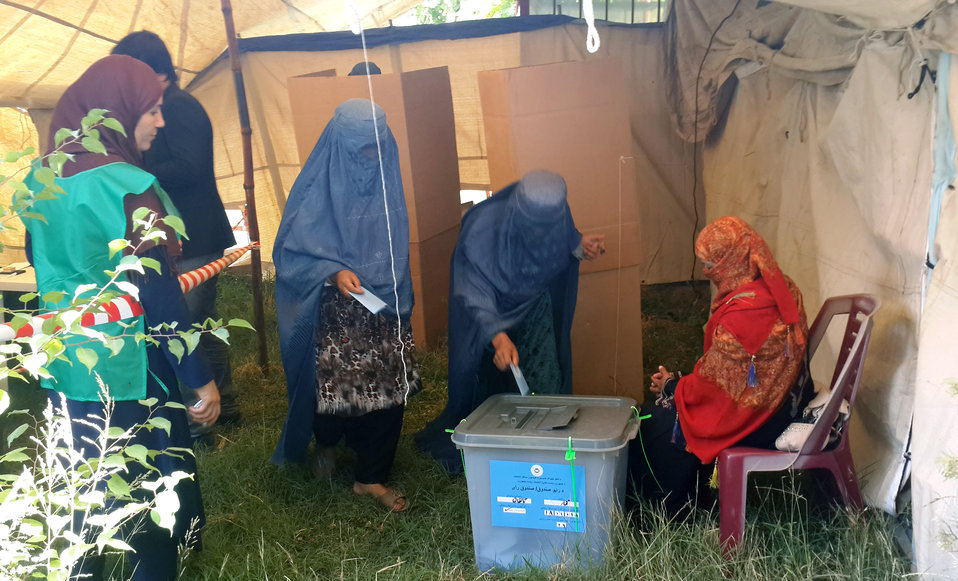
Women voters cast their votes at a polling center in northern Takhar province.